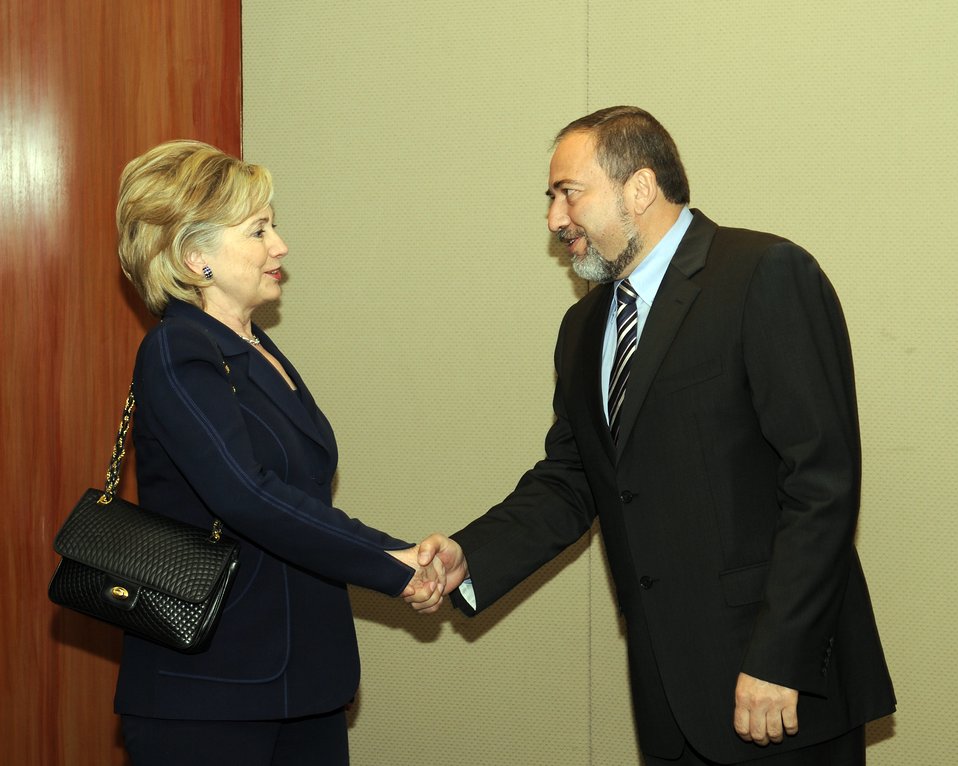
Secretary Clinton Meets With Israeli Foreign Minister

U.S. Secretary of State Hillary Rodham Clinton meets with Israeli Minister of Foreign Affairs Avigdor Lieberman in Jerusalem October 31, 2009.